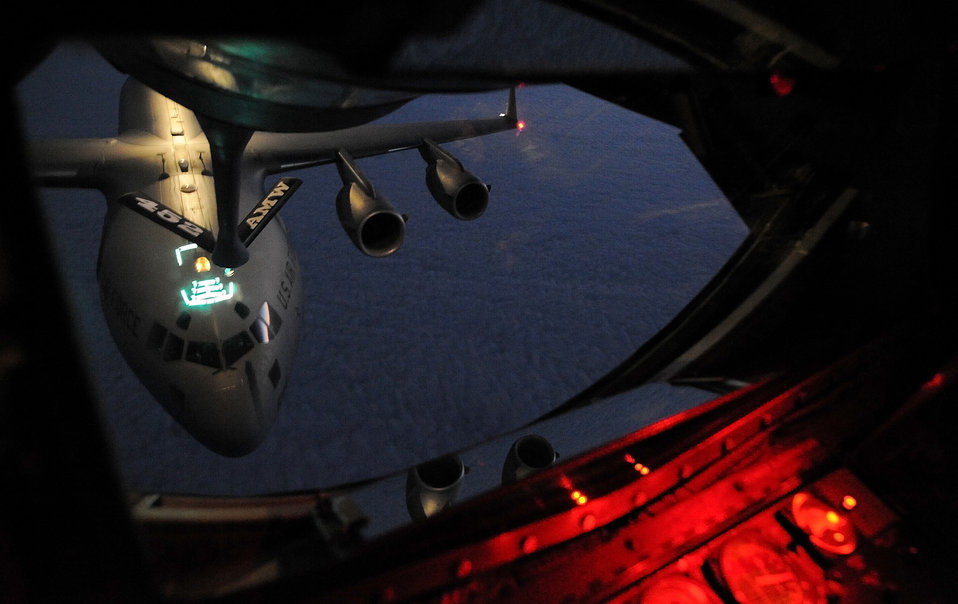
Photographer captures mission

A C-17A Globemaster III aircraft moves into position to receive fuel from a KC-135R Stratotanker during a refueling mission July 30 over the Pacific Ocean. The aircraft are from the 452nd Air Mobility Wing out of March Air Reserve Base, Calif.